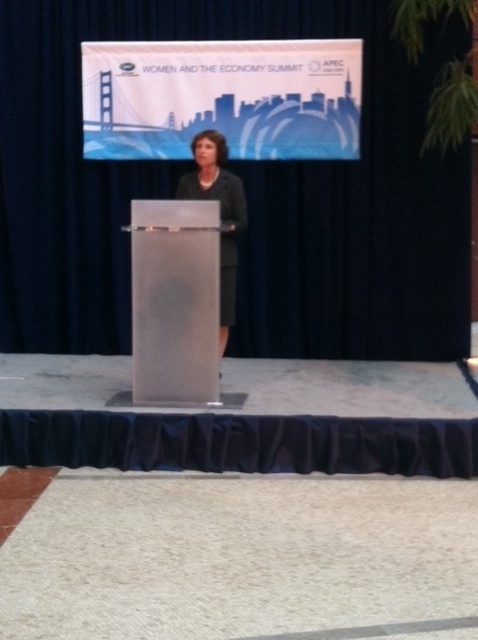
Special Representative Hariton Speaks During APEC Women and the Economy Summit

Special Representative for Commercial and Business Affairs Lorraine Hariton speaks during the Asia Pacific Economic Cooperation Women and the Economy Summit in San Francisco, California on September 13, 2011.